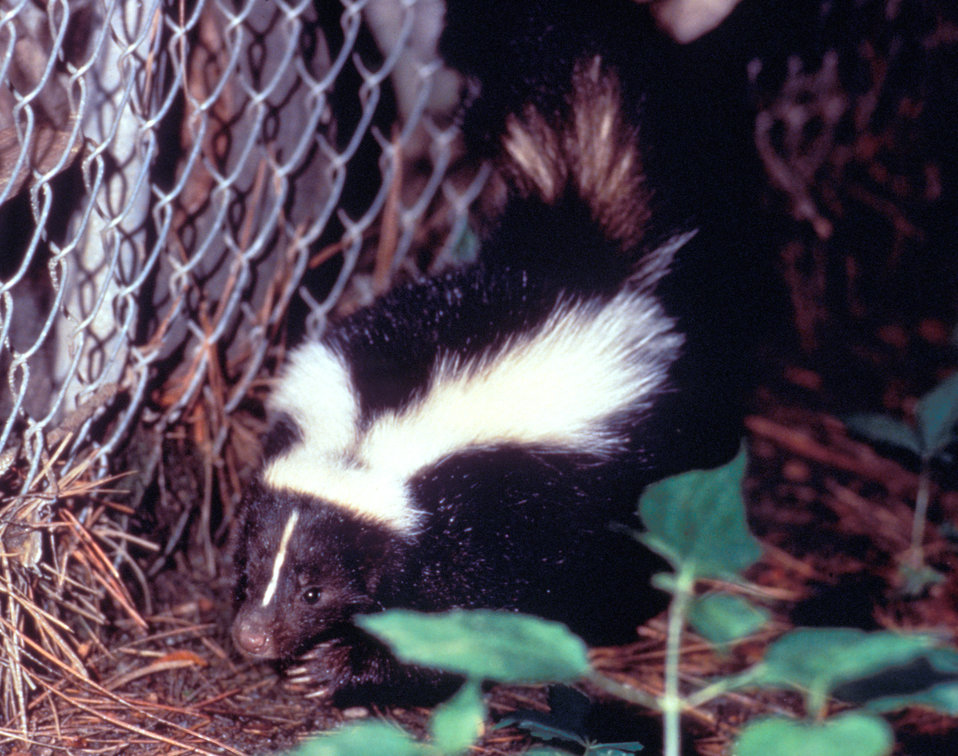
Approximately a third of reported animal rabies is attributed to the wild skunk population.